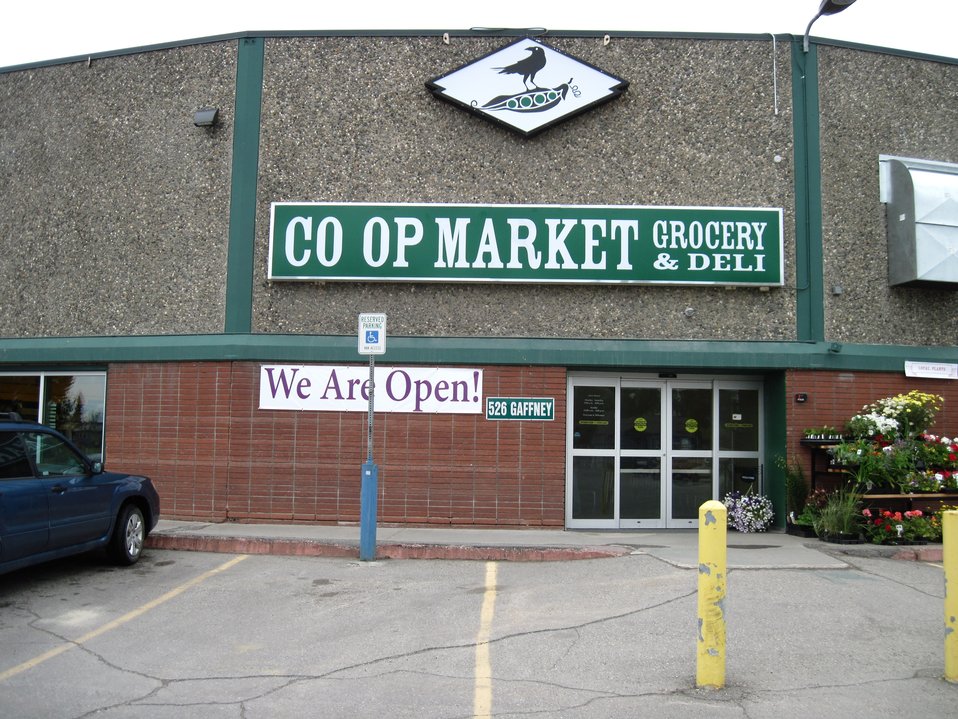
Fairbanks Coop Market 9

A new Co-op Market and Deli, centrally located in a former Fairbanks grocery store is Alaska’s first member-owned community grocery store is open for business. The Fairbanks Community Cooperative Market was partially funded by the U.S. Department of Agriculture (USDA) Rural Development (RD) Rural Economic Development Loans and Grants (REDLG) program.